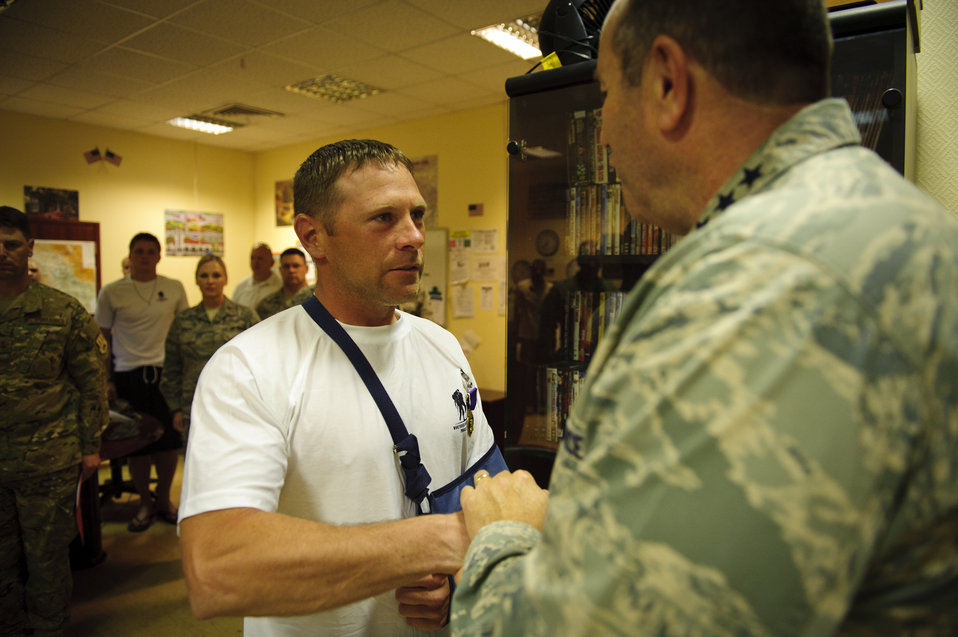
Breedlove presents Purple Heart to wounded Airman

Air Force Vice Chief of Staff Gen. Phil Breedlove talks with Tech. Sgt. Jake Tieman after presenting him the Purple Heart May 7, 2012, at a base in Southwest Asia. Tieman is a member of the 577th Expeditionary Civil Engineer Squadron's Base Engineer Emergency Force. He was wounded by shrapnel near a forward operating base in Afghanistan.